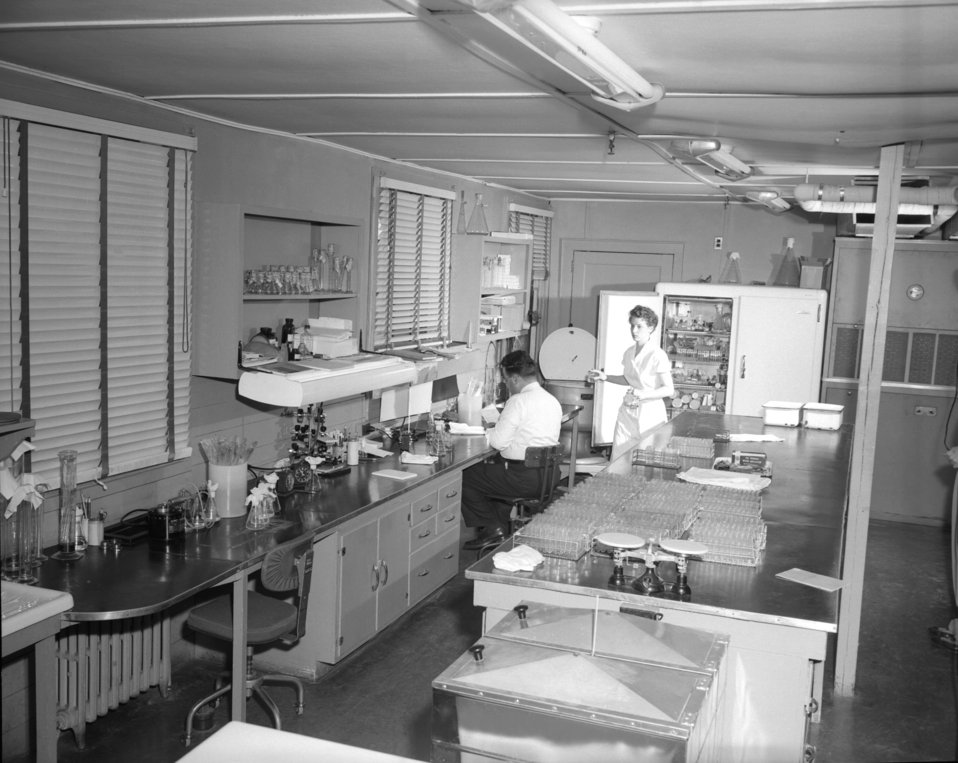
This photograph depicts two technicians at work in a laboratory setting.